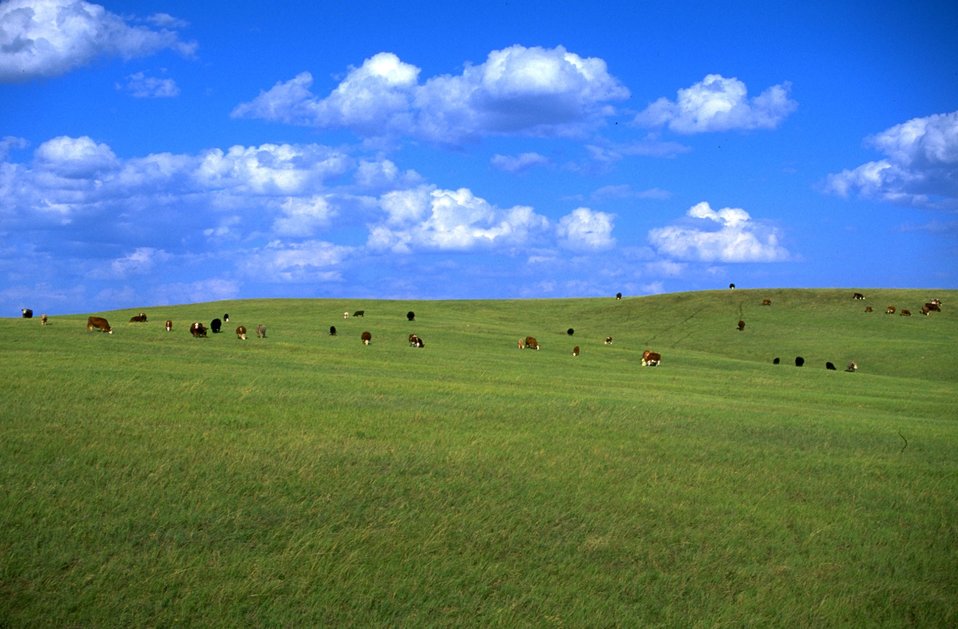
Cattle grazing 45 miles north of Belle Fourche